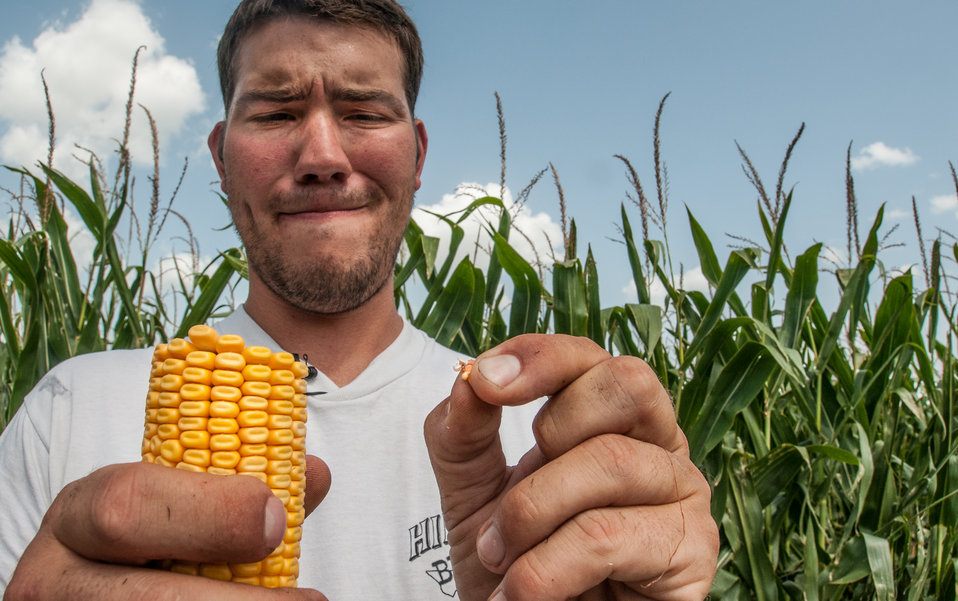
Philip Marek checks the health of a crop of #2 yellow corn at his father's farm and squeezes a kernel to roughly check if it has reached the 15% water content level needed for harvesting in Wharton County, TX on Jun. 20, 2013. Philip Marek has been a farm owner since 2010 and started with 210 acres. Marek and his cousin Josh Marek were able to use a U.S. Department of Agriculture (USDA) Farm Services Agency (FSA) small and new farmer and rancher loan programs provided them the ability to handle initial business start-up and equipment purchase.